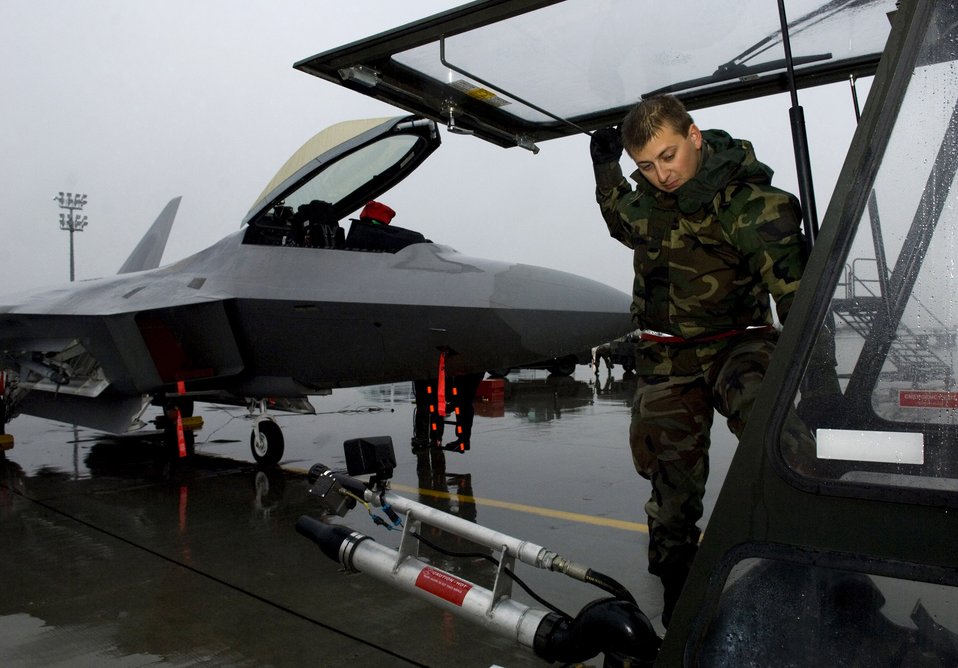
Getting ready for winter in Alaska

Airman 1st Class Alexander Buck climbs into a de-icer Sept. 19 at Elmendorf Air Force Base, Alaska, prior to practicing de-icing techniques on an F-22 Raptor. The de-icing test will help officials gather technical data on how cold weather effects the maintenance crew's capabilities while working with this aircraft during the winter. The onset of light dustings of snow on the surrounding mountain ranges is a sign the Alaskan winter is just around the corner. Airman Buck is assigned to the 3rd Aircraft Maintenance Squadron.